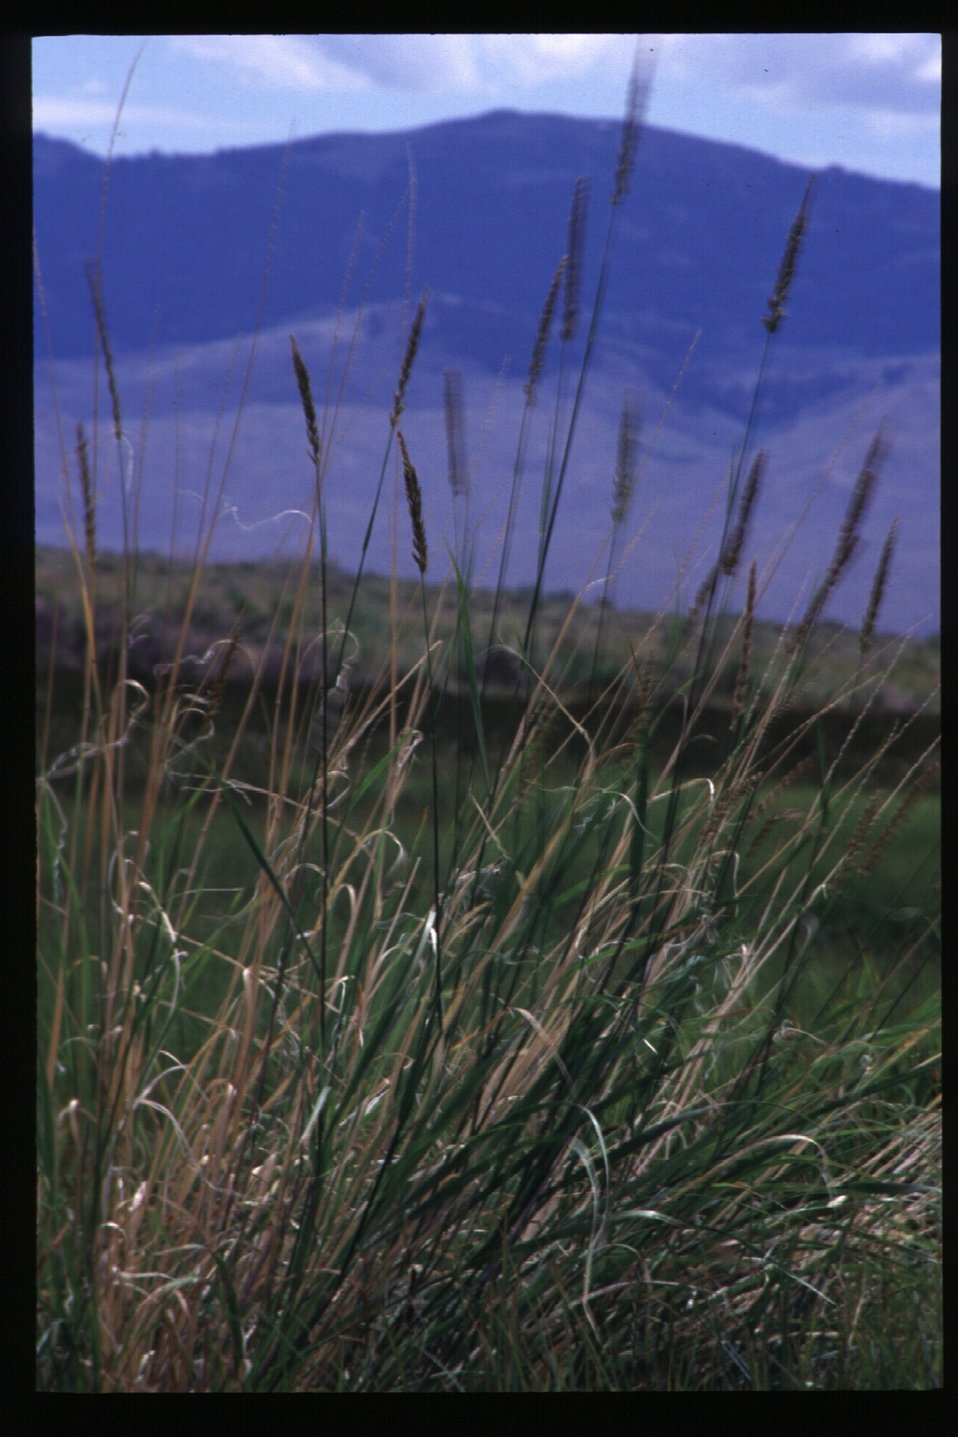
Wetlands, Chilly Slough Grasses Overview of south unit Challis Field Office UCSC Upper Columbia Salmon Clearwater District